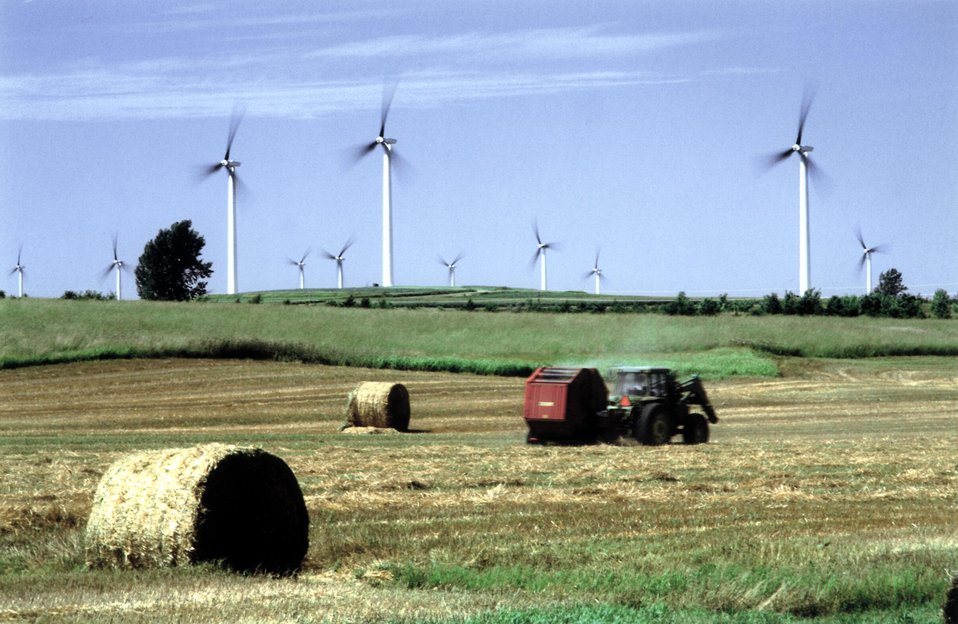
WIND TURBINES AT LAKE BENTON IN SOUTHWESTERN MINNESOTA.